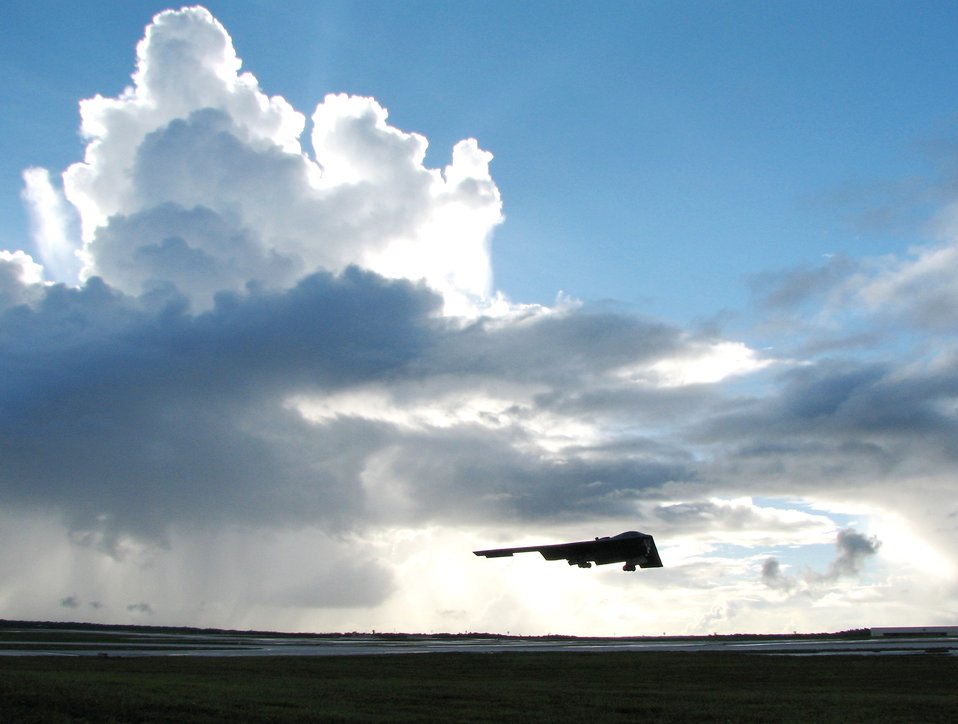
Whiteman B-2s complete successful Andersen deployment

A B-2 Spirit from the 13th Expeditionary Bomb Squadron departs on a training mission during one of the final sorties of a four-month deployment to Andersen Air Force Base, Guam, Aug. 24. The 13th and 393rd EBS flew more than 140 sorties and released more than 330 weapons during the deployment. B-2 aircraft, pilots, maintainers and support staff deployed from the 509th Bomb Wing at Whiteman AFB, Mo.